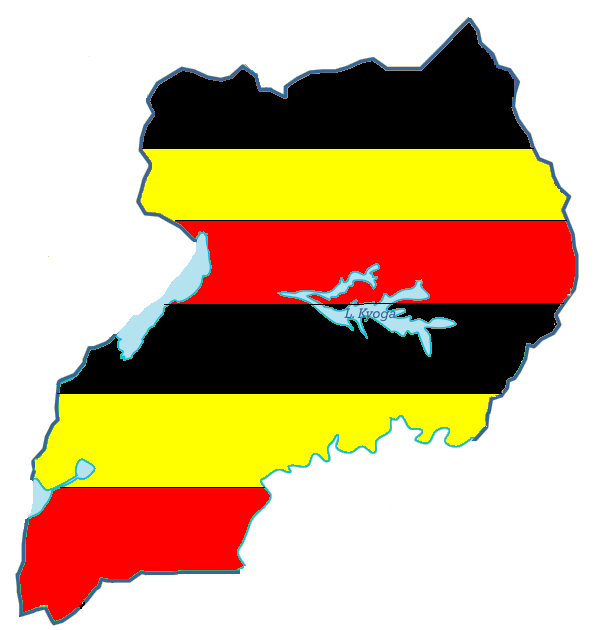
This image was made by overlaying the colors of the Uganda flag on a modified outline taken from en::Image:Languages of Uganda.png.